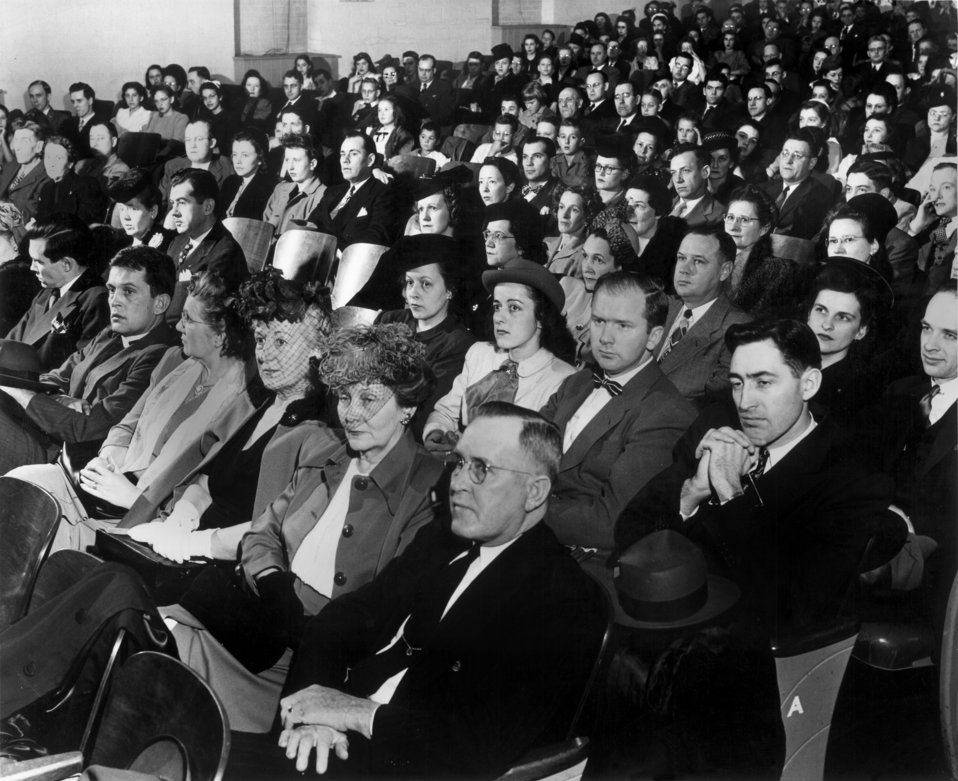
Townmeeting Oak Ridge

DOE photo Ed Westcott 4/7/47 Oak Ridge Tennessee
property tax meeting at the playhouse